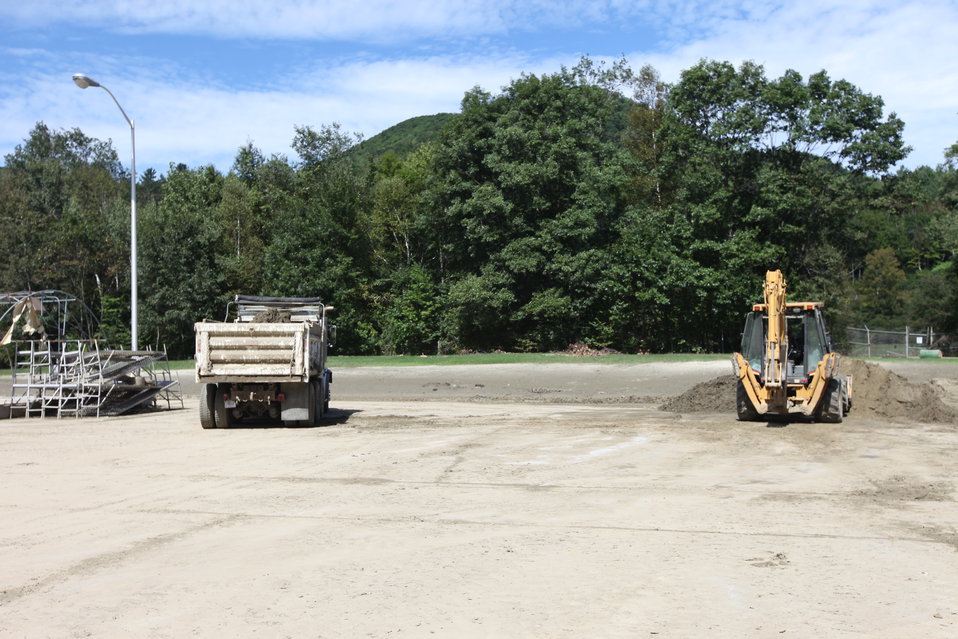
Storm damage relief at White River NFH

Heavy equipment operators came from other USFWS stations to help clean up.